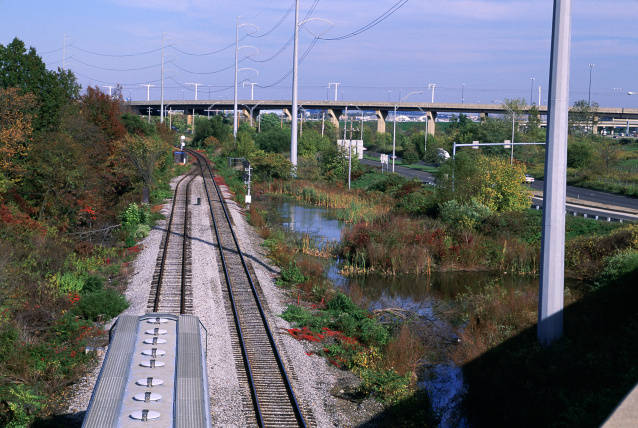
Power lines and train tracks in National Wildlife Refuge

Photo credit: USFWS/John and Karen Hollingsworth

While sectors such as energy, water, and transportation will respond to climate change impacts in their own way, the decisions made in these sectors will ultimately impact our nation’s fish, wildlife, and plants. At times, adaptation efforts taken by these sectors can conflict with the needs of ecosystems (maladaptation).